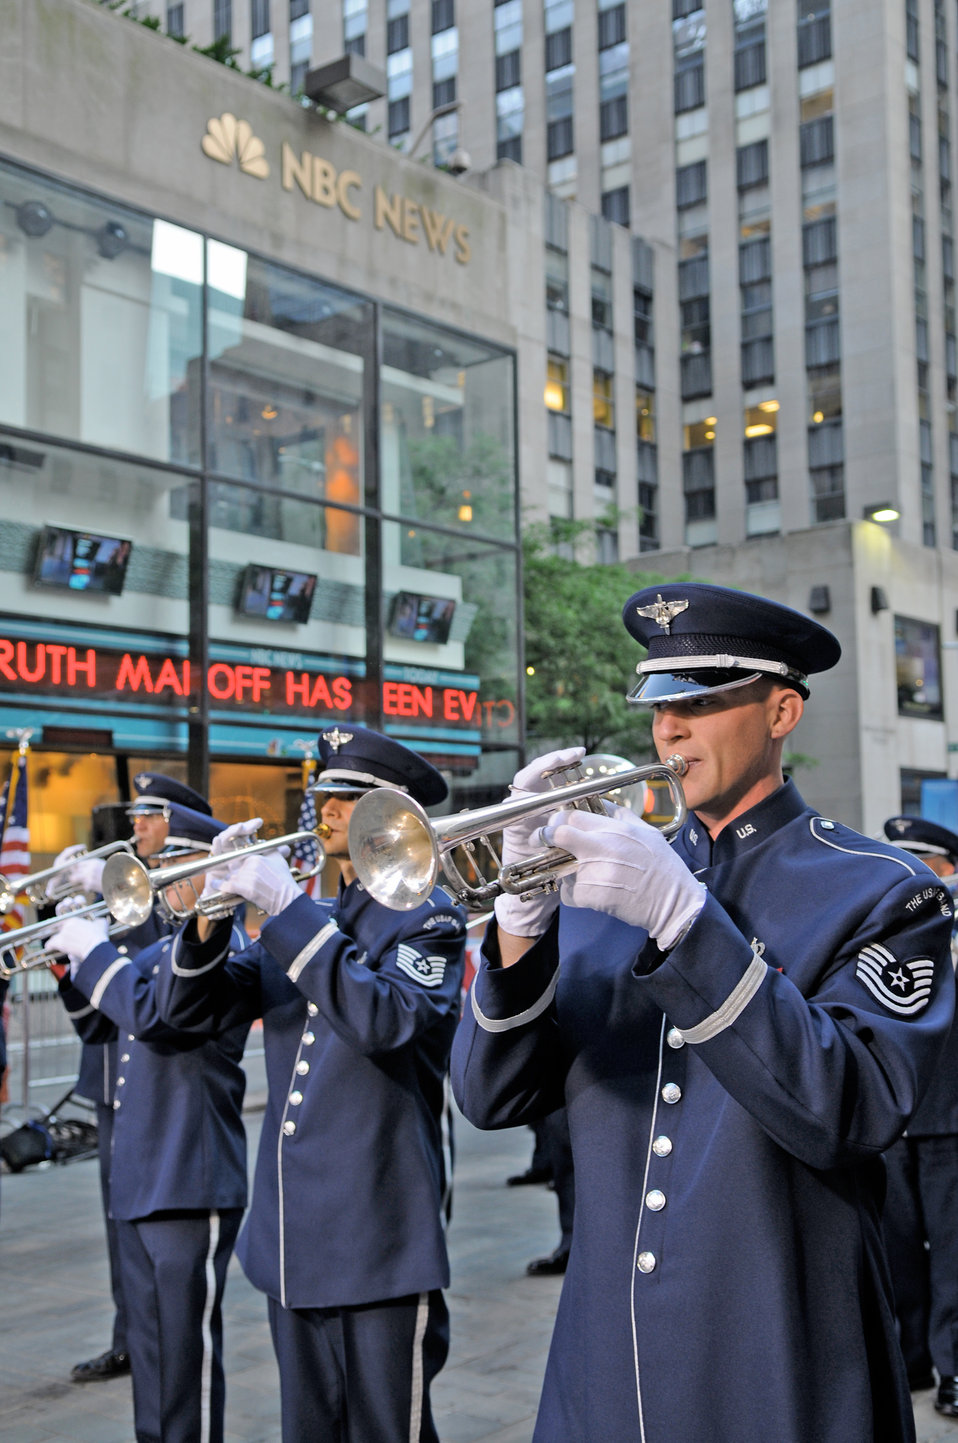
Band performs on 'Today' show

Trumpet players from the Air Force Band Ceremonial Brass perform during a live Independence Day broadcast from Rockefeller Plaza on the